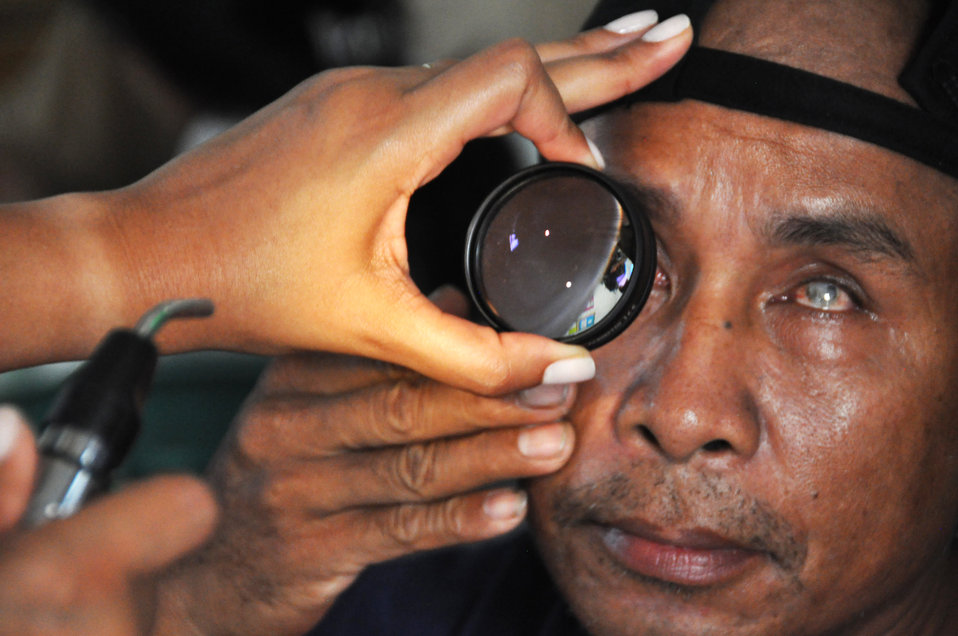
Airmen help hundreds in Timor Leste

An East Timorese man has his eye examined during inprocessing at a clinic July 16 in Dili, Timor Leste. East Timorese and U.S. officials set up the clinic as part of Operation Pacific Angel 2009, a Pacific Air Forces humanitarian assistance operation led by 13th Air Force at Hickam Air Force Base, Hawaii.